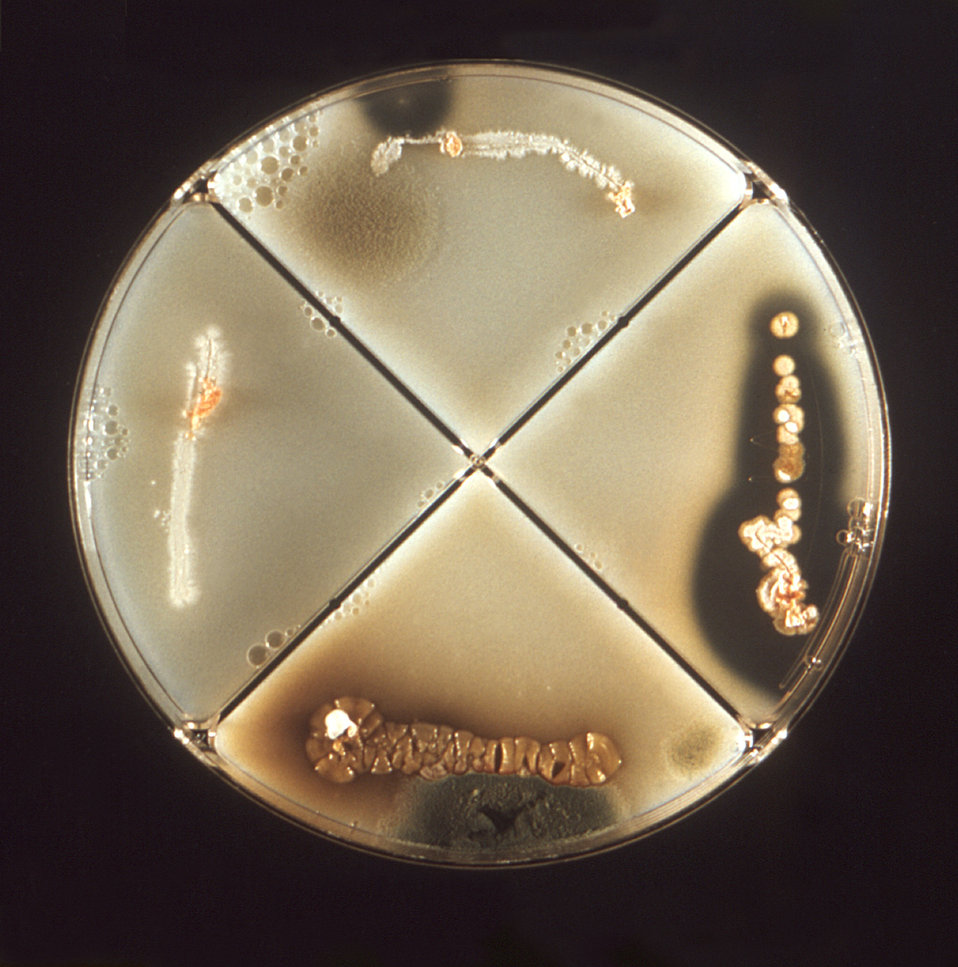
This photograph depicted a QUAD Plate containing a casein growth media upon which Nocardia and Streptomyces Gram-positive bacterial colonies were grown. This particular image revealed results that had been contaminated by mold.